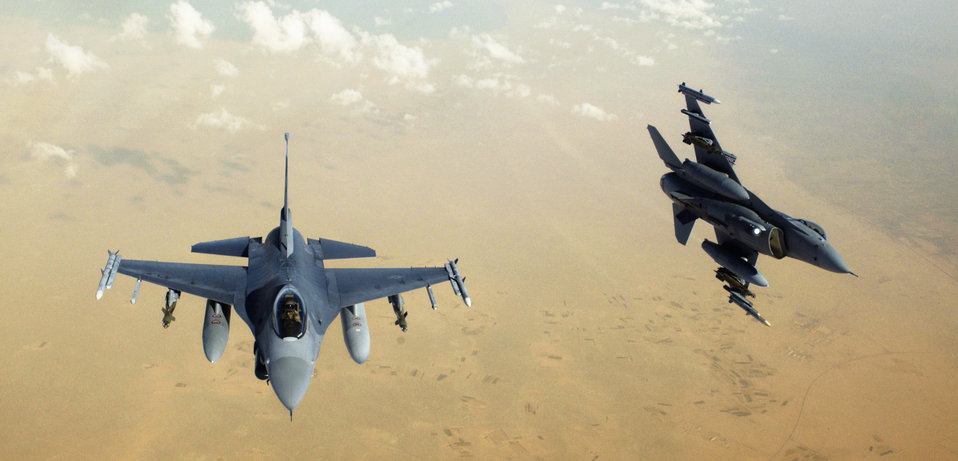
Hook-up over Baghdad

BAGHDAD, Iraq -- Two F-16 Fighting Falcons prepare for an aerial refueling over the Tigris River near here Oct. 14. The F-16s are from the Virginia Air National Guard's 192nd Fighter Wing.